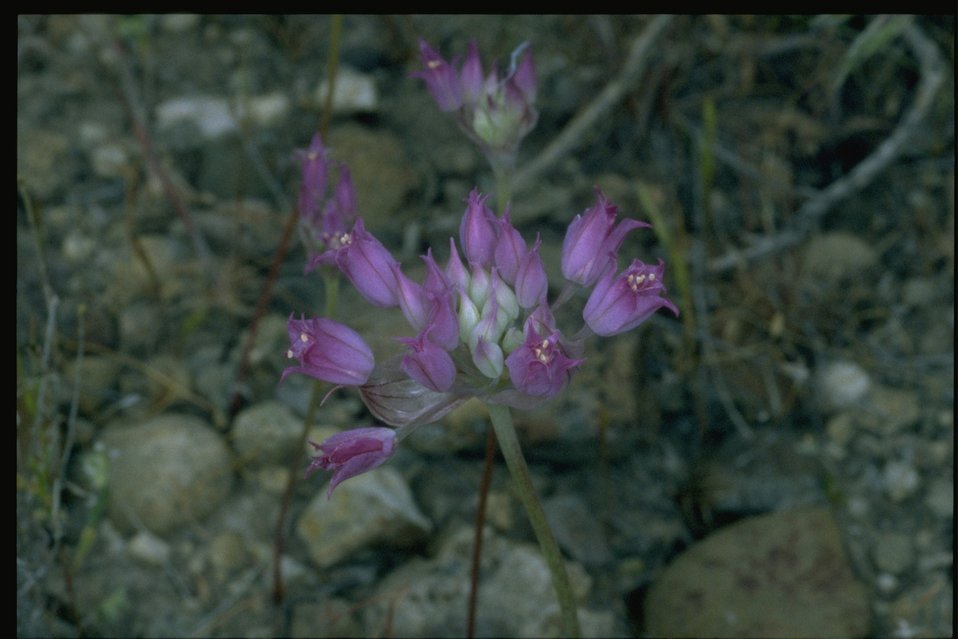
Closeup of wild onion blossom.